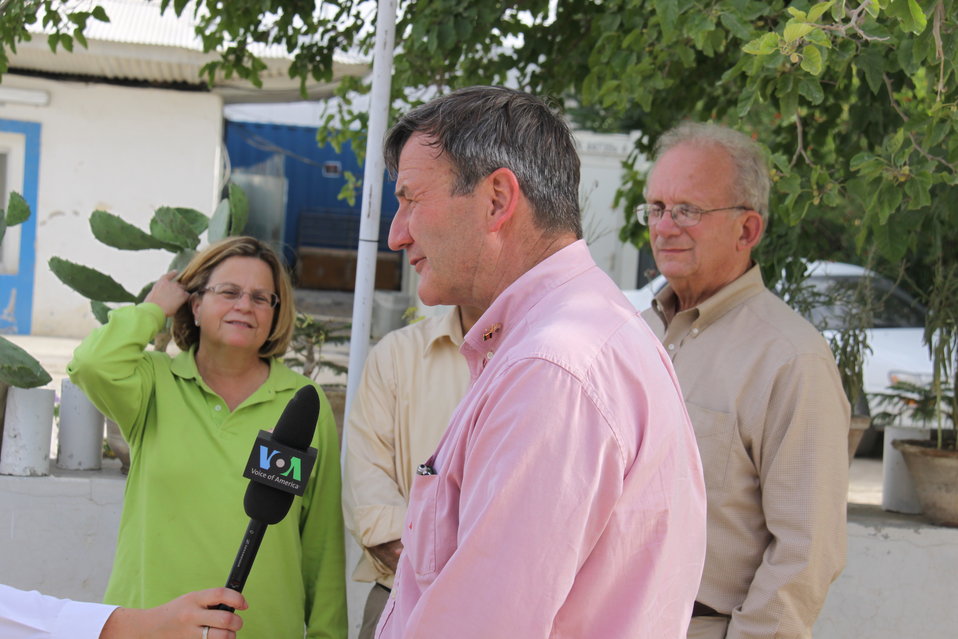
Meeting with Local Leaders in Kandahar